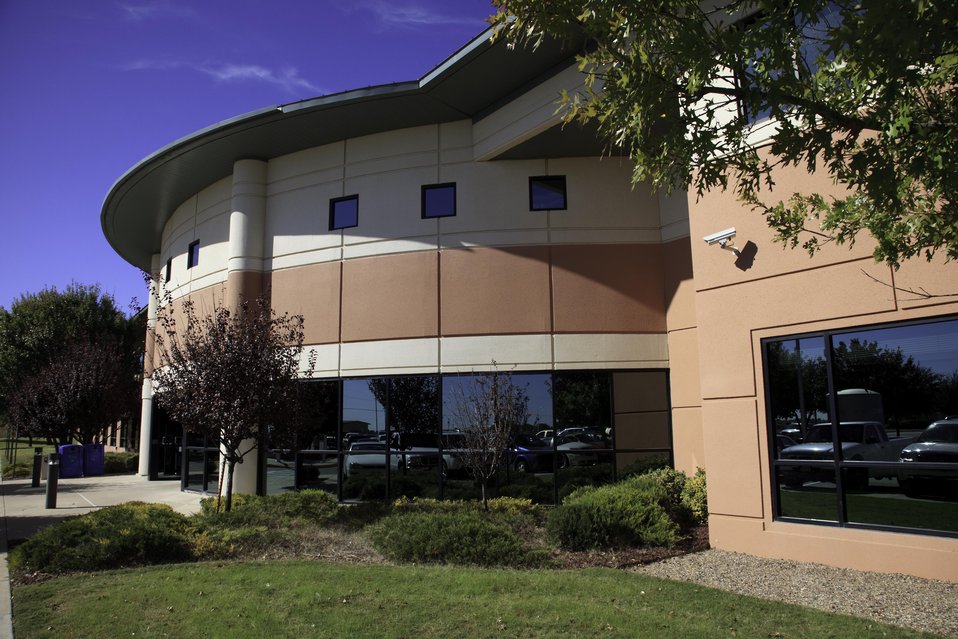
EM Analytical Services Program Reports Success in First Year of Comeback

The National Analytical Management Program (NAMP) offers a centralized hub for analytical resources within the DOE complex. The program assists in the standardization of methods and provides a mechanism to coordinate receipt and analysis of samples from outside agencies. NAMP also establishes reimbursement mechanisms for services.